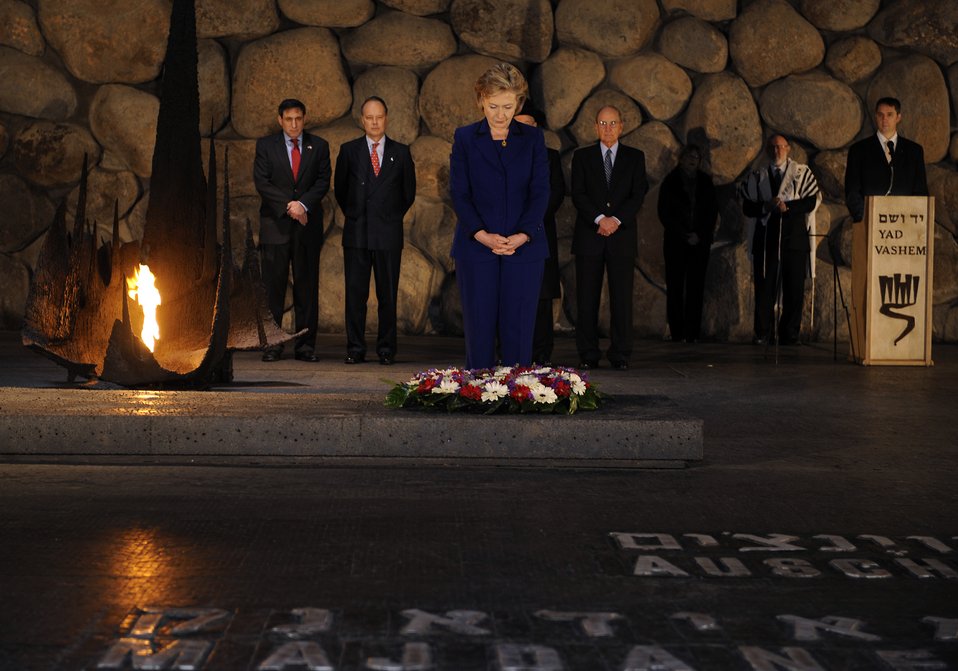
Secretary Clinton Lays a Wreath in the Hall of Remembrance

U.S. Secretary of State Hillary Clinton relights the eternal flame and lays a wreath in the Hall of Remembrance in Jerusalem March 3, 2009.